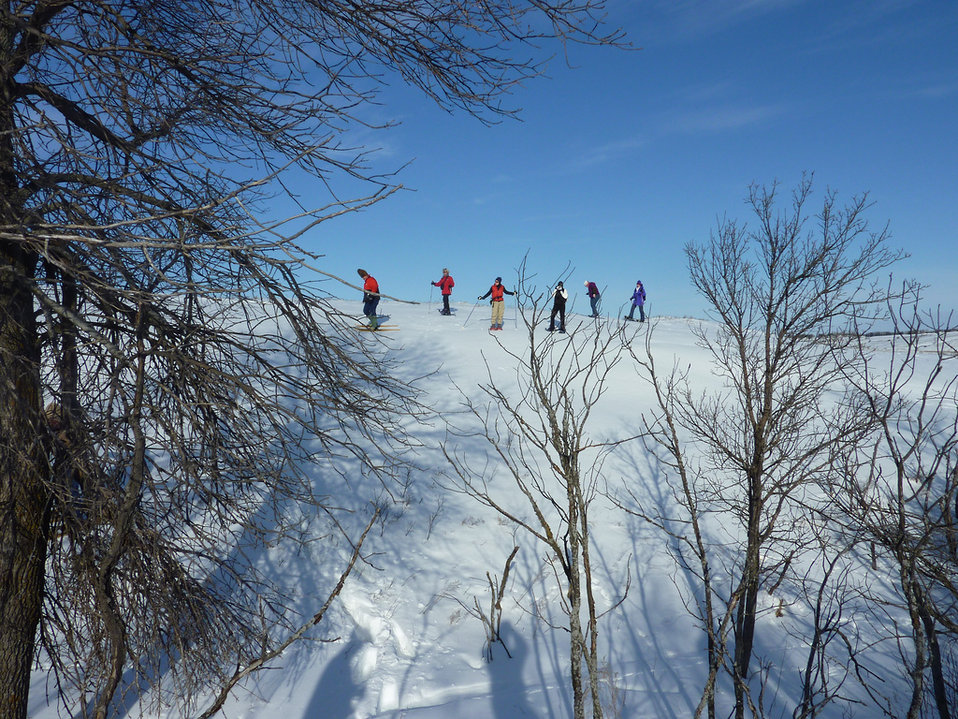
snowshoers

Des Lacs National Wildlife Refuge, ND